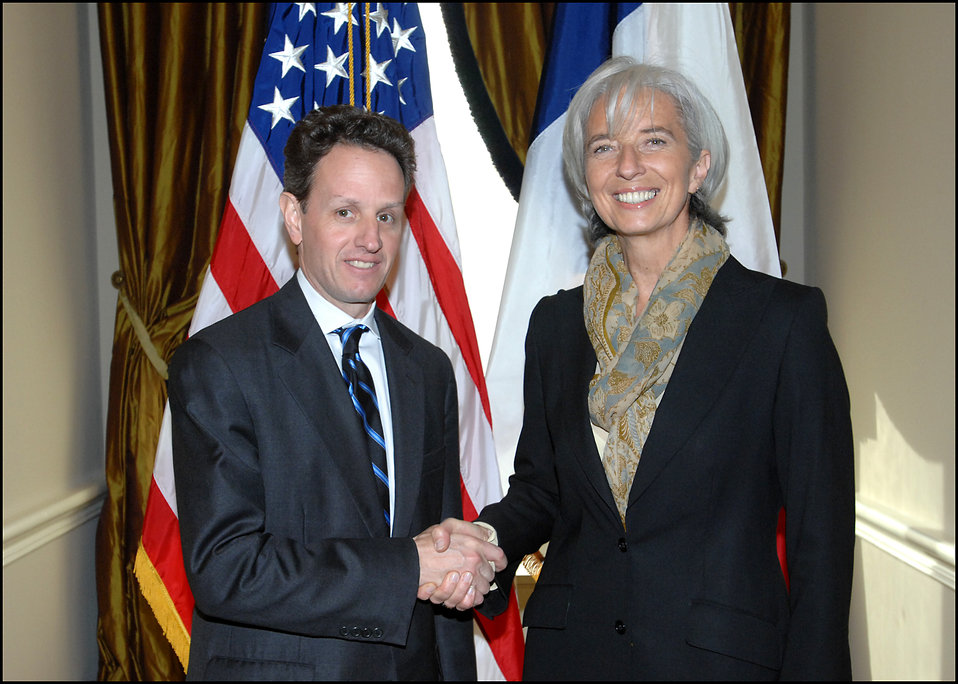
French Minister of Economy, Industry and Employment Christine Lagarde

On February 19, 2009, Secretary Tim Geithner met with French Minister of Economy, Industry and Employment Christine Lagarde at the Treasury Department in Washington, DC